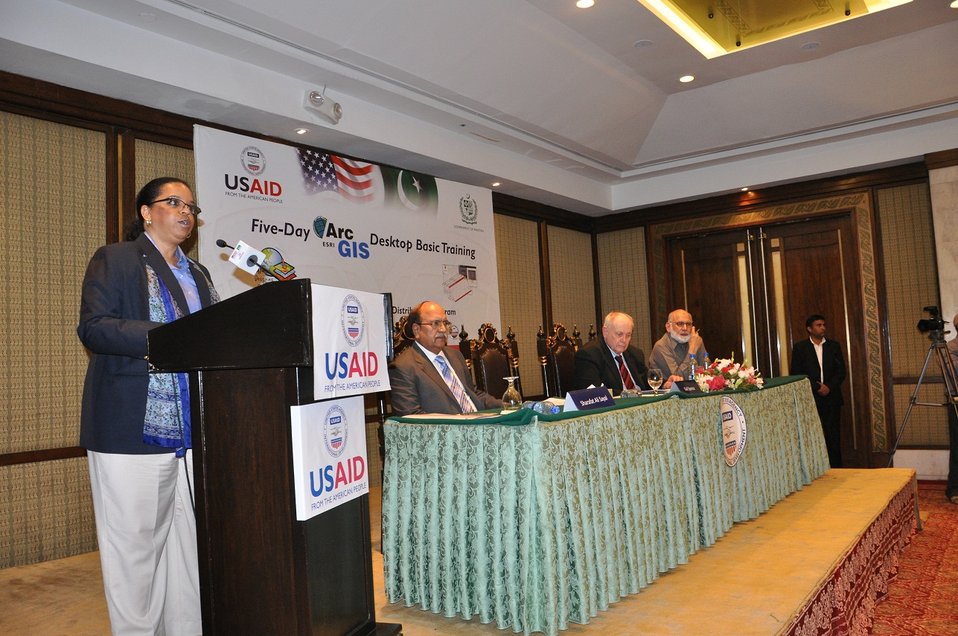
Planning and Engineering Workshop at Lahore

Lahore, July 20, 2012: The United States is strengthening Pakistan’s energy sector and helping to end energy shortages. In this effort, Acting Director USAID Punjab Gail Spence distributed certificates to mangers from nine power sector distribution companies (DISCOs) who completed a U.S.-funded five-day Planning and Engineering training program. The training aims to modernize the Planning and Engineering (P&E) sectors of the DISCOs improving energy distribution across Pakistan. “I am confident that thanks to this training, Pakistan will now be better able to meet its power sector reform targets and reduce the energy crisis,” Ms. Spence remarked.

The USAID Power Distribution Program organized the training in close collaboration with the Lahore Electric Supply Company (LESCO). The four year USAID Power Distribution Program is a testament to the United States’ commitment to supporting Pakistan’s energy sector. Through the Power Distribution Program, USAID is helping DISCOs modernize equipment, receive expert consultations, and introduce international best practices to ensure a more reliable supply of power to consumers.